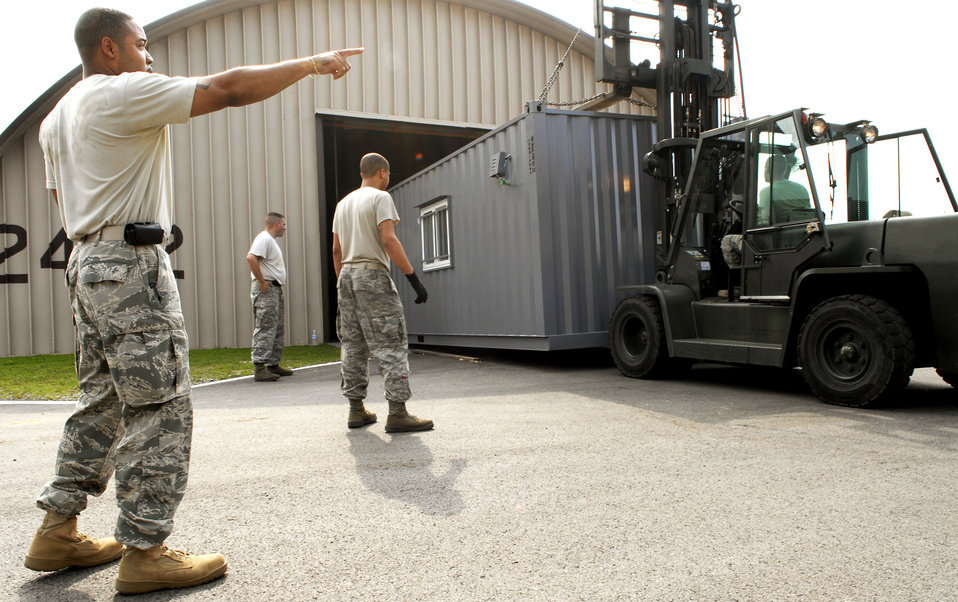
Preparing a city

Airmen relocate a conex in tent city July 30 in preparation for Ulchi Freedom Guardian at Osan Air Base, South Korea. More than 550 military members will participate in the exercise involving forces from both South Korea and the U.S.